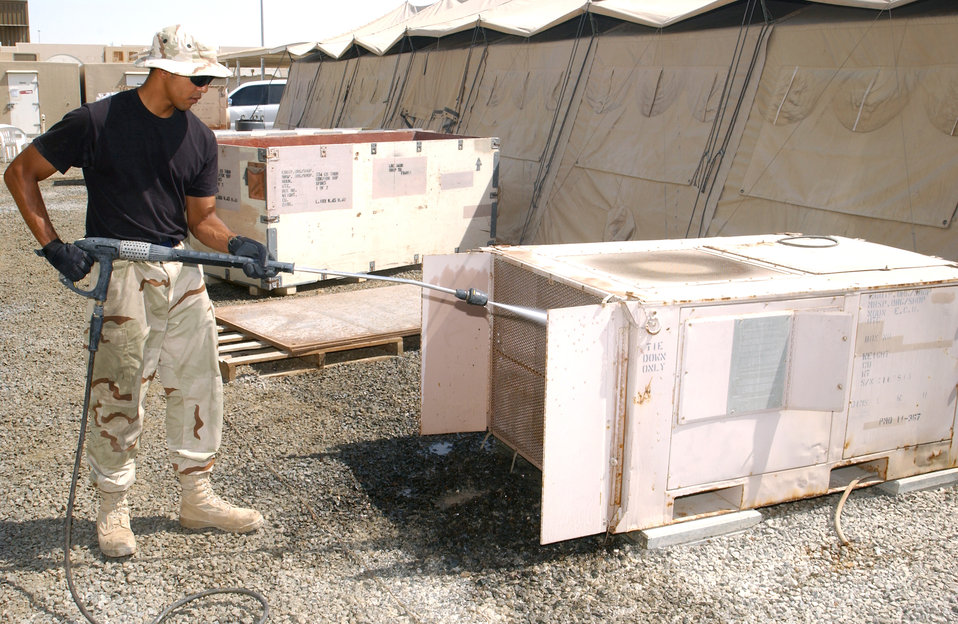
Keeping it cool

Senior Airman Robert George sprays the coils of an air-conditioning unit with water outside one of the dining facilities at this deployed location in Southwest Asia Oct. 11. The water rinses off hydrochloric acid used previously to clean sand, grit and debris from the unit's coils, which are much like that of an automobile radiator. There are better than 3,000 air-conditioning units at this base, which is home to about 1,500 Airmen and the 380th Air Expeditionary Wing. Airman George is assigned to the 380th Expeditionary Civil Engineer Squadron and deployed from Yokota Air Base, Japan.